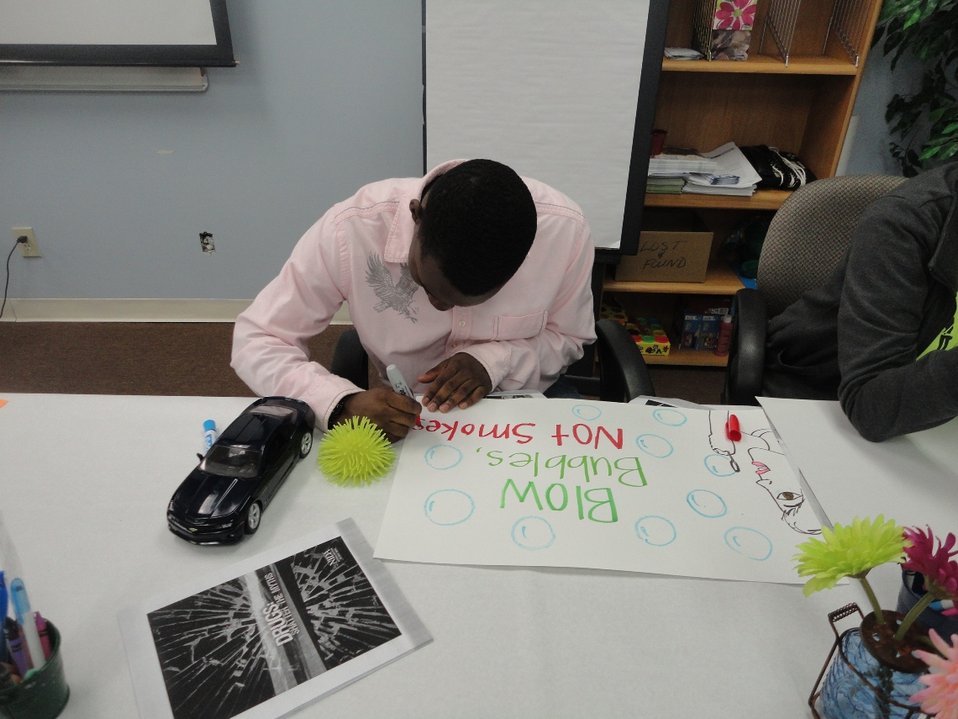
DREAM's, MS Student Advisory Board of Youth Highway Safety NDFW 2013

Mississippi High School Students participate in NDFW 2013 events.